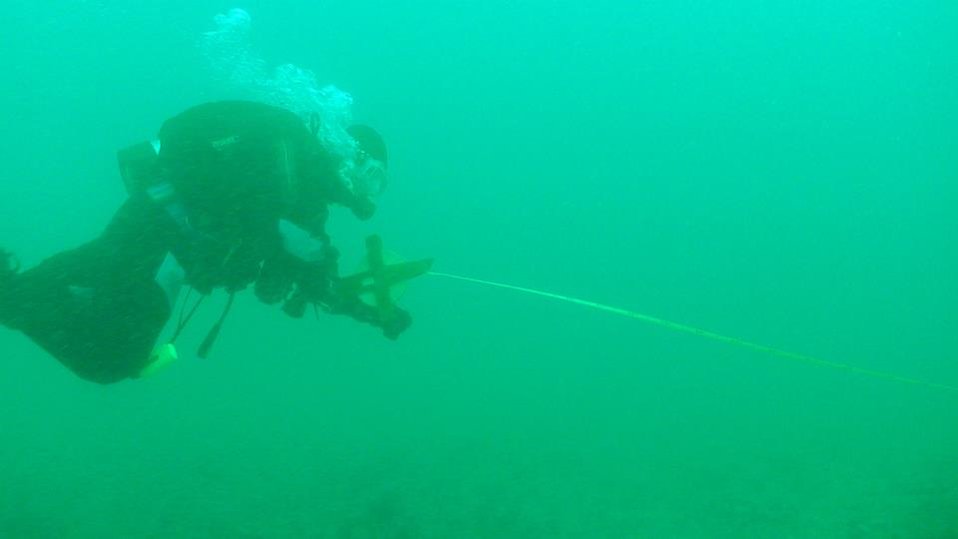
July 26, 2012 Tough, but expected visibility for Elwha River Study

The freshwater silt plume being released from the Elwha River now that the dams are coming down casts a 'cloud' over areas near the river mouth. As the current changes direction in the Strait, the 'cloud' moves back and forth to various areas, limiting light penetration to the bottom.

The measurement tape, shown here is called a 'transect' and is used to ensure that the permanent monitoring stations are surveyed consistently. Divers surveyed from 10 to 40 meters on the transect at a one meter width on either side. This ensures that results are compared year to year from the same area, to give statistically representative data on any changes that may occur as a result of the dam removal.

Photo of Nancy Elder, USGS, reeling in her transect tape after completing an invertebrate count at a survey station.